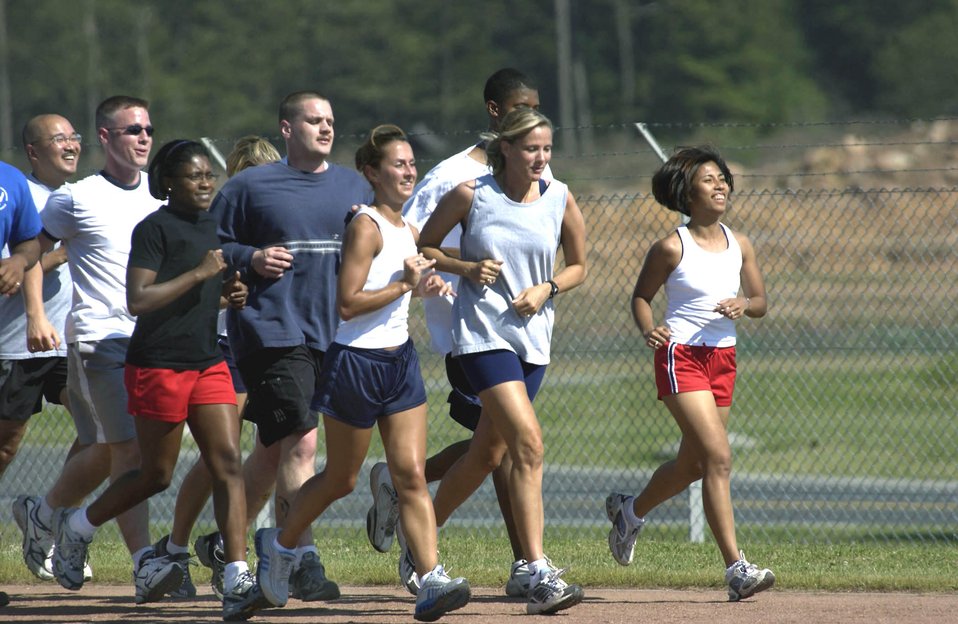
Run like the wind

SPANGDAHLEM AIR BASE, Germany (AFPN) -- Staff Sgt. Mary Anne Reyes (far right) leads runners from the 52nd Fighter Wing Comptroller Squadron here on a 2.5-mile run. The squadron is three-time winner of the base's annual